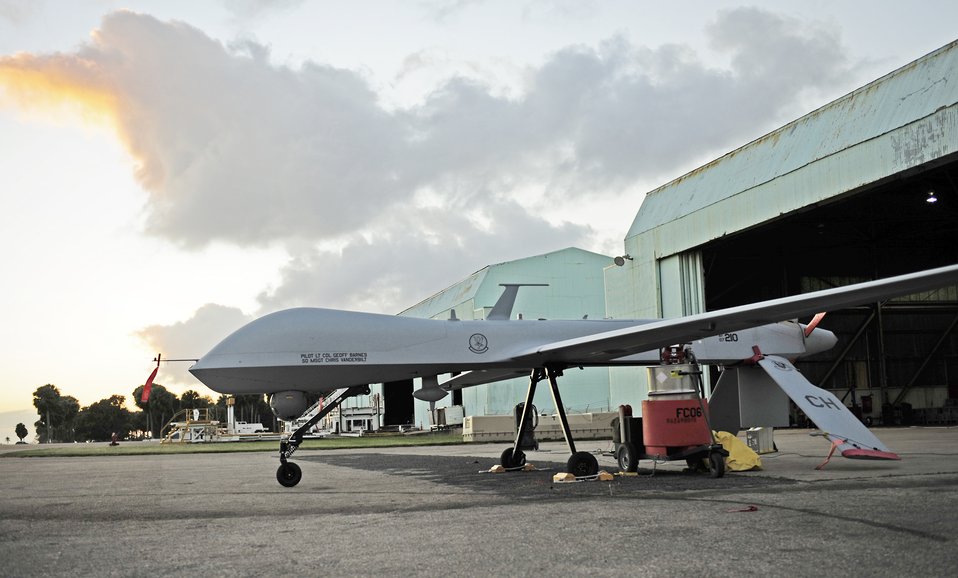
Haiti Earthquake Relief

An RQ-1 Predator prepares for takeoff at Aeropuerto Rafael Hernandez Jan. 27, 2010, outside Aguadilla, Puerto Rico. The remotely piloted aircraft are operating out of Puerto Rico in support of Operation Unified Response in Haiti. Airmen from Creech Air Force Base, Nev., are providing 24-hour-a-day full-motion video in real-time to international relief workers on the ground in order to speed humanitarian aid to remote and cut-off areas of the country following the earthquake Jan. 12, 2010.